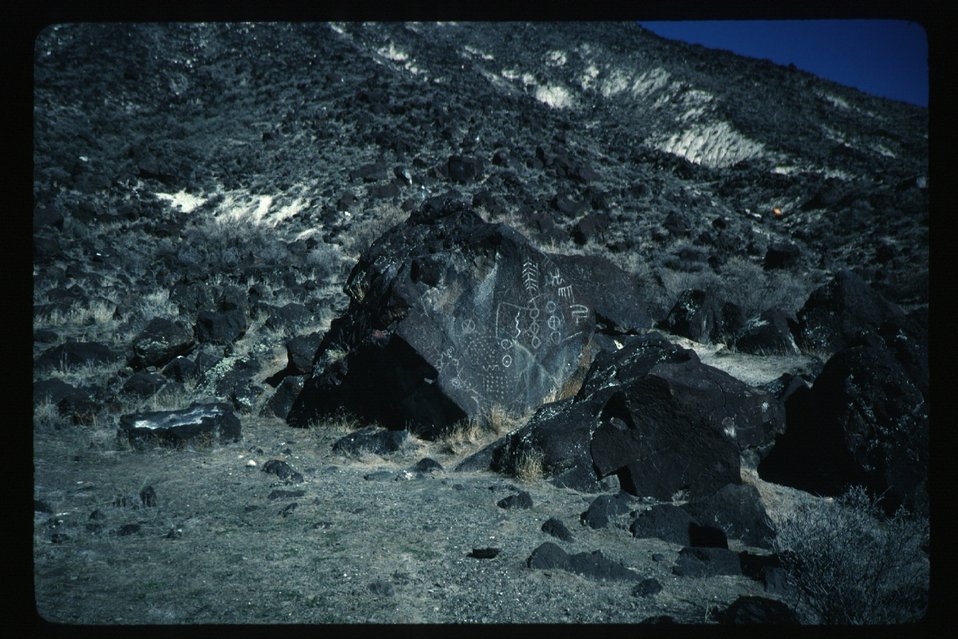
Petroglyphs Archeology LSRD Lower Snake River District